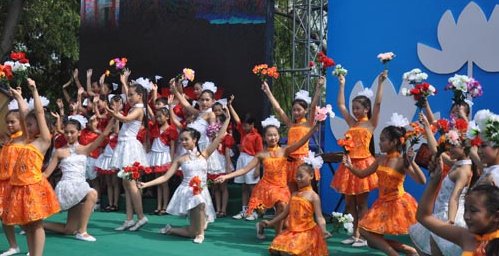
Children perform during Hanoi's 1,000th anniversary celebrations.